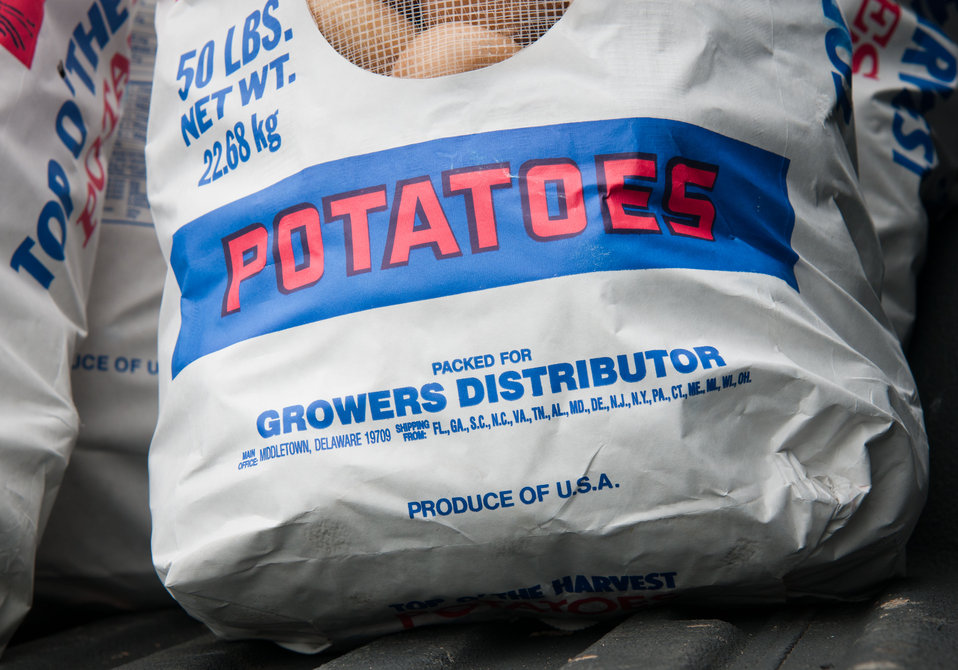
Agriculture Under Secretary for Farm and Foreign Agriculture Service (FFAS) Michael Scuse donates 1,000 pounds of potatoes to DC Central Kitchen, in participation with the Feds Feed Families Food Drive, on Monday, August 20, 2012 in front of the Agriculture headquarters in Washington, D.C. Under Secretary Scuse, a farmer himself purchased the half-ton of potatoes at Wicks farm, near his own farm, in Delaware.